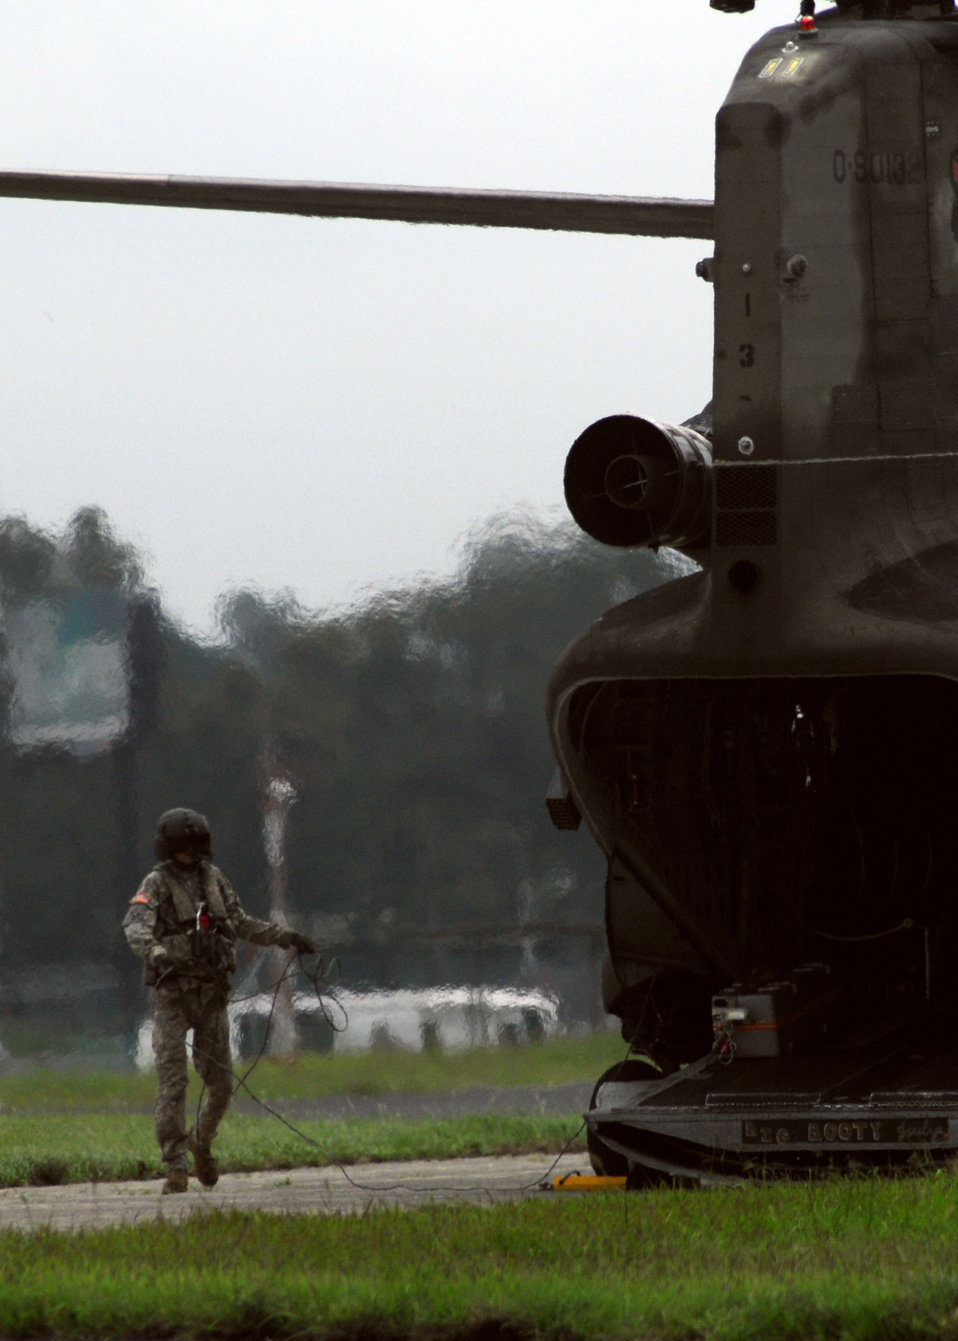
Joint Task Force-Bravo members help victims of Guatemala disaster

An Army 1st Battalion, 228th Aviation Regiment, aircrew member from Joint Task Force-Bravo prepares to take off June 4, 2010, to deliver food and water to communities affected by Tropical Storm Agatha and the Pacaya volcano. Joint Task Force-Bravo's helicopters and personnel transported nearly 53,000 pounds of relief supplies June 3 through 4 to Guatemalan communities in need.